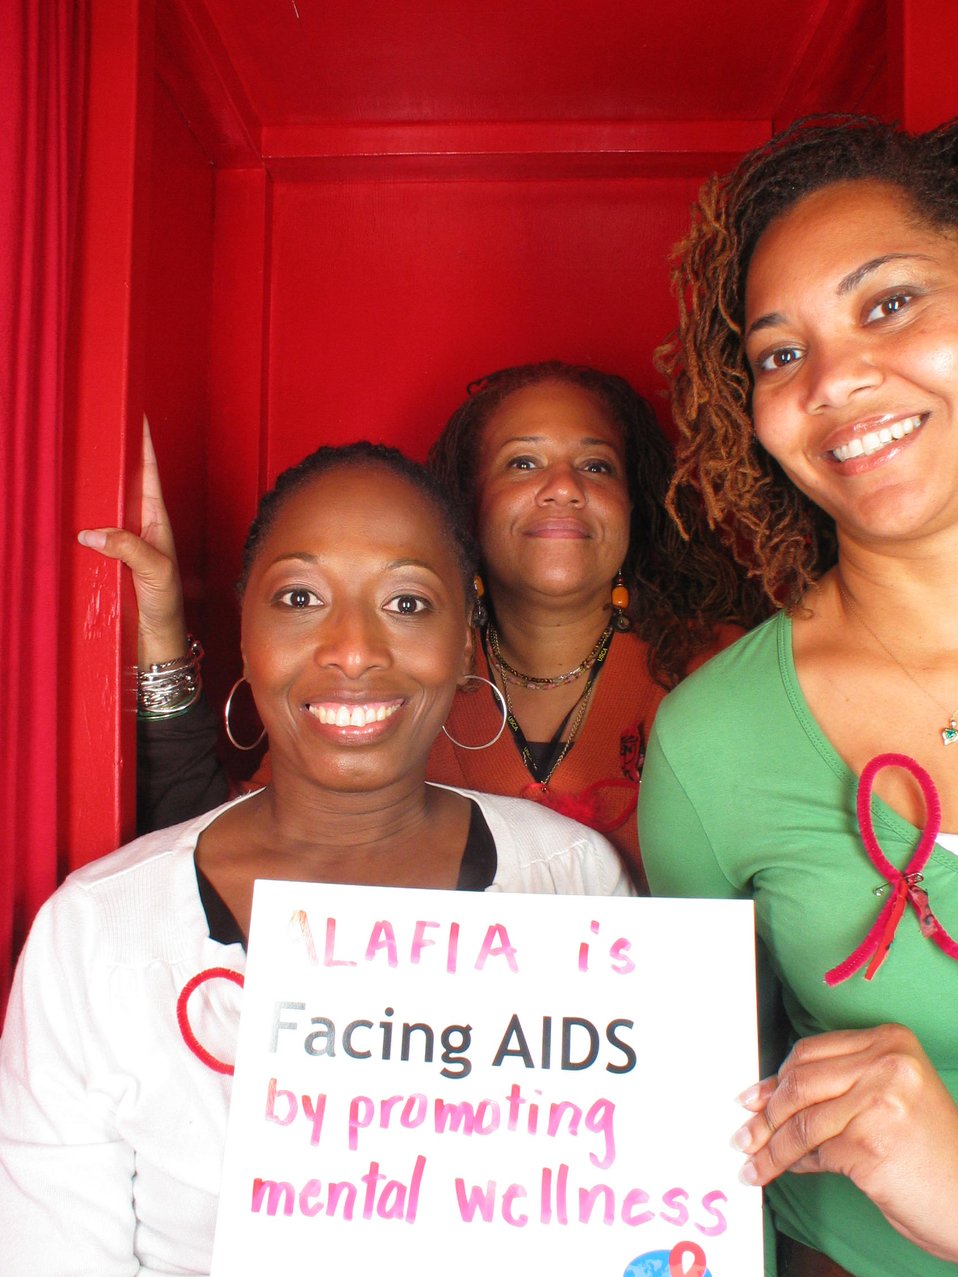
Facing AIDS by promoting mental wellness.